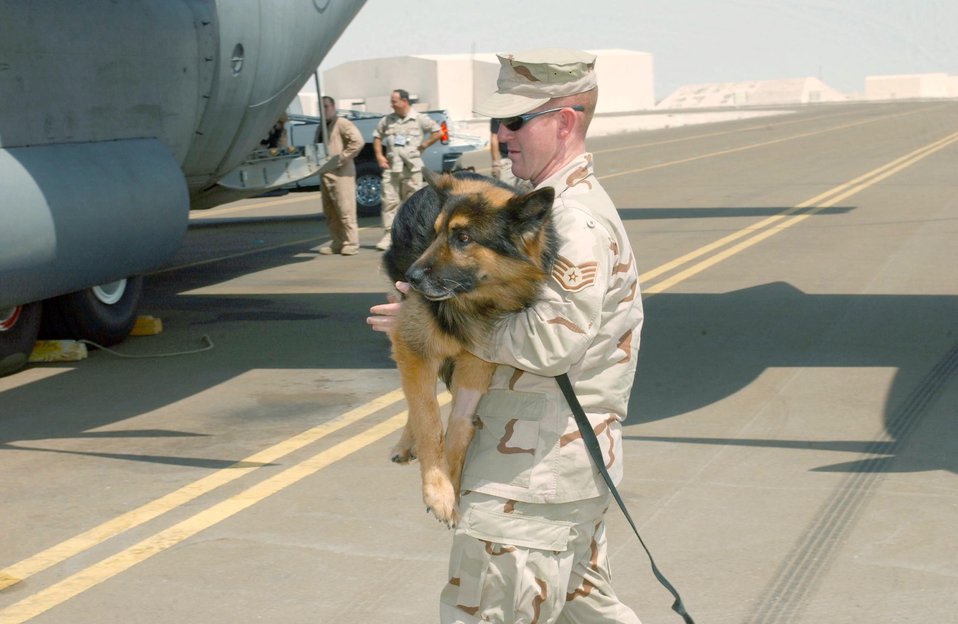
Canine aerovac

SOUTHWEST ASIA -- Staff Sgt. Timothy Cox carries his military working dog, Ronny, to a C-130 Hercules on Aug. 22 for an aeromedical evacuation to Germany. Ronny was diagnosed with pericardial effusion, an unnatural collection of fluid around his heart that began interfering with the heart's functioning. Sergeant Cox and Ronny are assigned to the 380th Expeditionary Security Forces Squadron at a forward-deployed location.